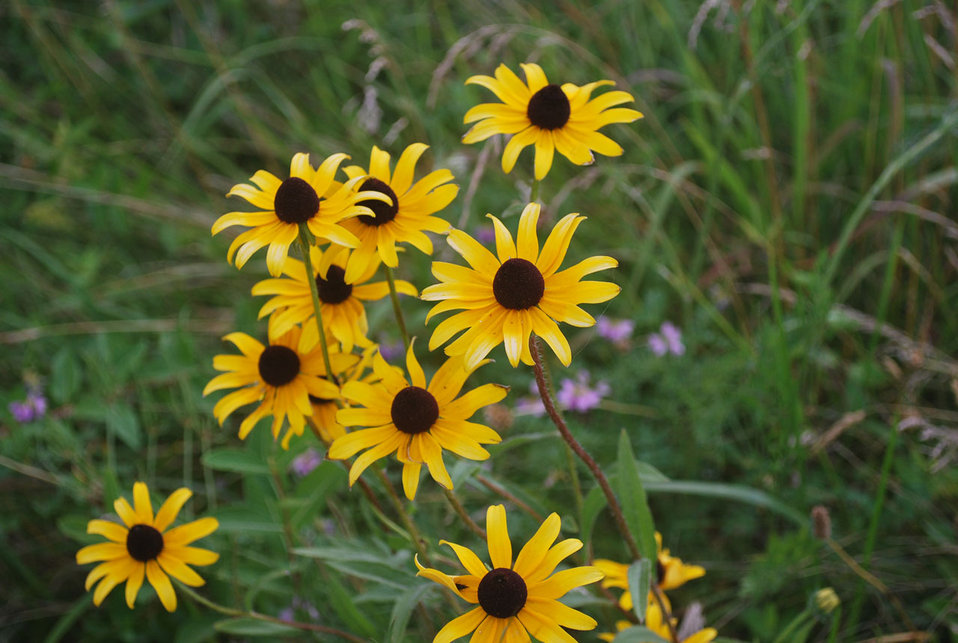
Wild flowers

Black eye susan.